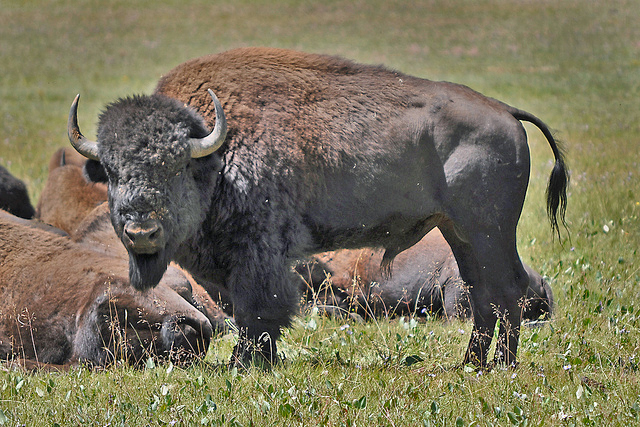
Bison herd-a

The Houserock Valley Bison Herd grazes on the Kaibab National Forest in Arizona. Bison will soon be seen grazing on the Midewin National Tallgrass Prairie in Illinois.